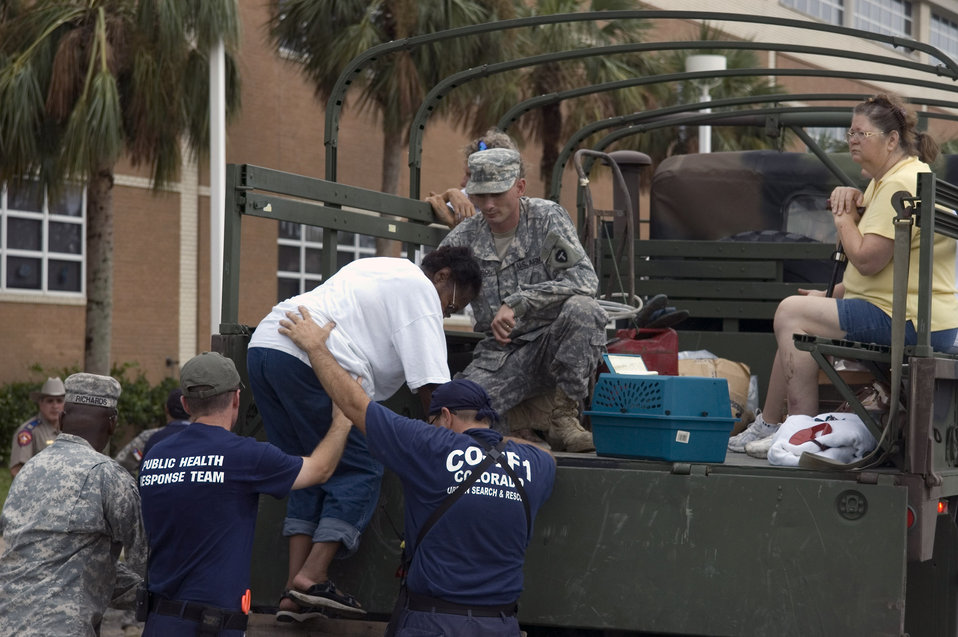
Airmen, soldiers aid people affected by Hurricane Ike

Joint responders assist people from five-ton vehicles at a local high school in Galveston, Texas, before being be bused to San Antonio.